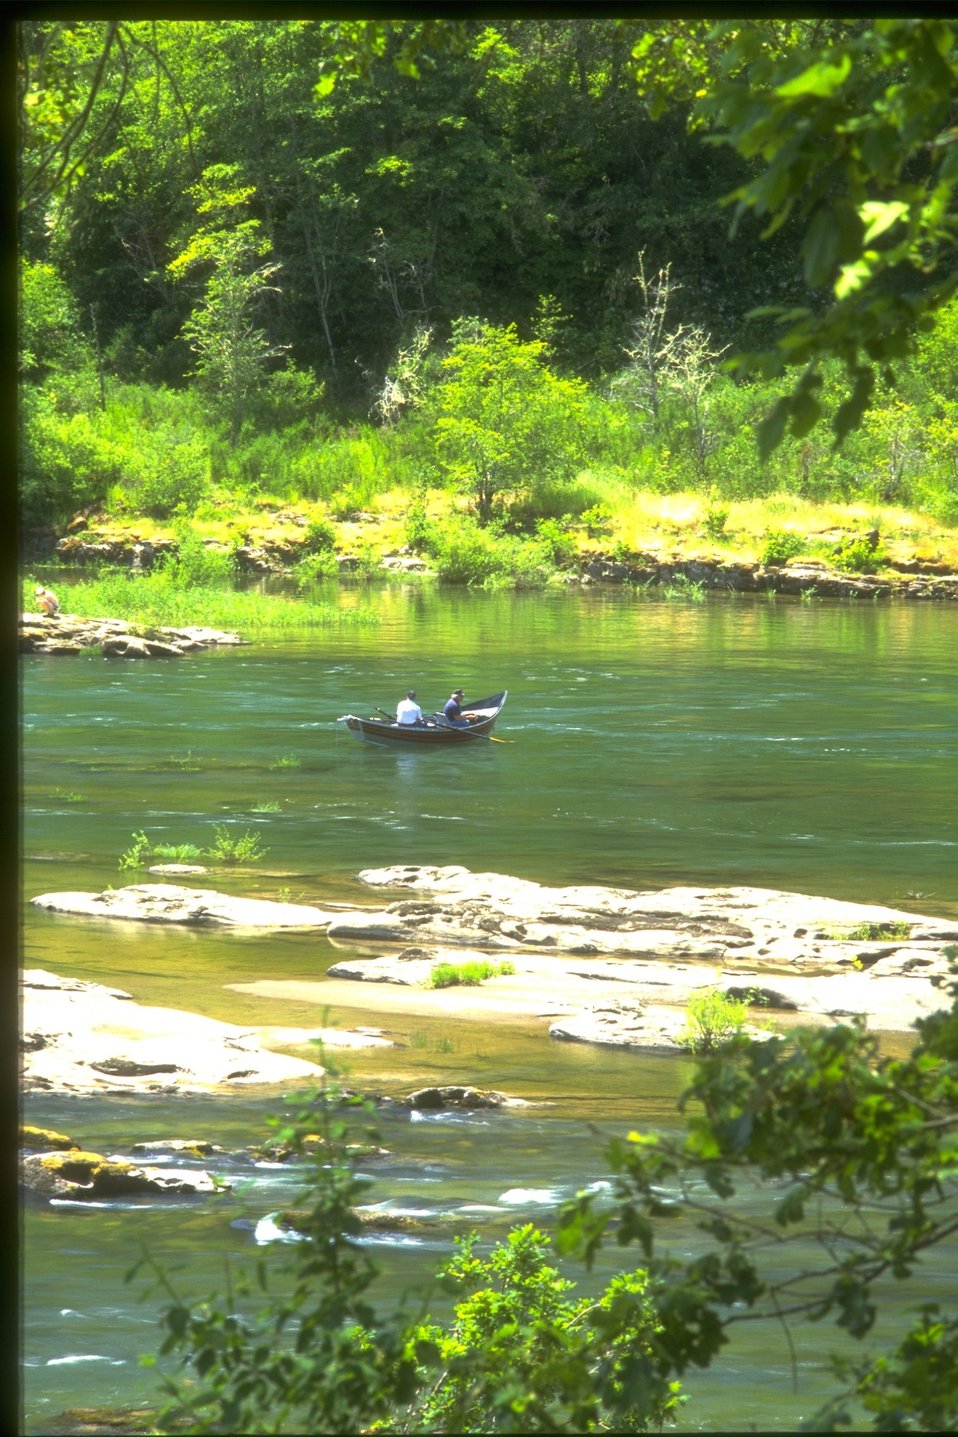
Fisherman on a driftboat are fishing the North Umpqua River near the Osprey boat ramp.